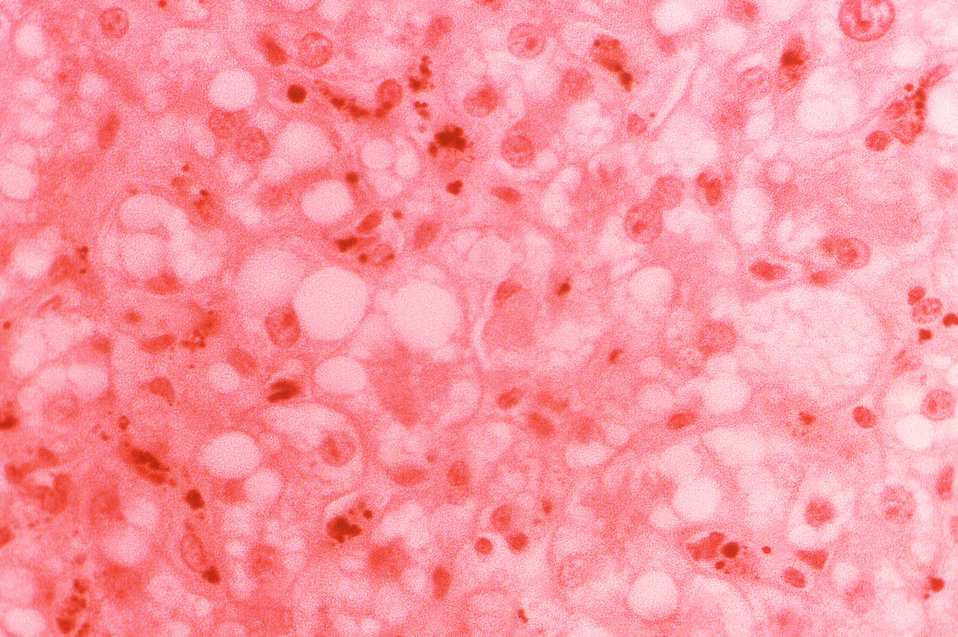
Under a high magnification of 400X, this hematoxylin-eosin-stained (H&E) photomicrograph depicts the cytoarchitectural changes found in a liver tissue specimen extracted from a yellow fever patient using a needle biopsy method. In this particular view, you'll note a maturing Councilman body that is surrounded by hepatocytes, as well as accompanying fatty changes indicated by the presence of microvacuoles due to yellow fever, and macrovacuolar changes due to the impact of malnutrition. Also present, due to an accompanying malarial infection, are haemosiderin-filled Kuppfer cells. See PHIL 2176, and 8239, depicting TEMs of the yellow fever virus.